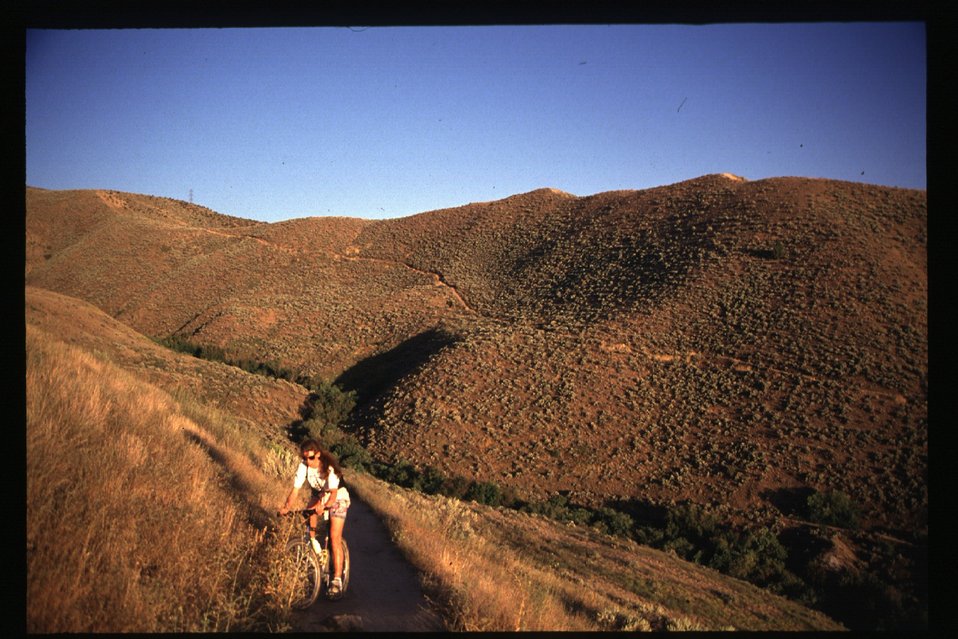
Bikers on Boise Foothills Boise Front bicyclists Four Rivers Field Office LSRD Lower Snake River District